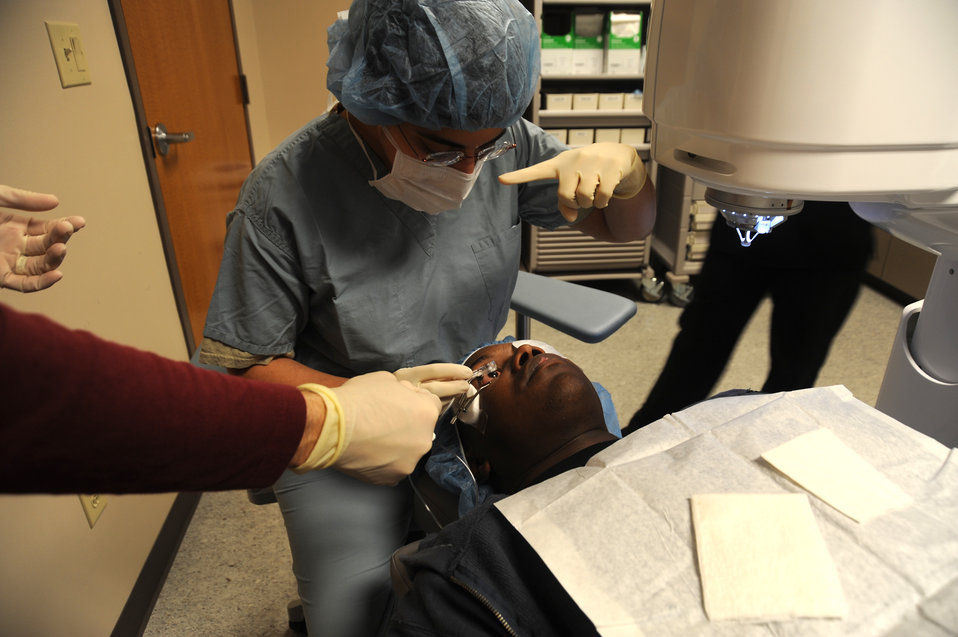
WHMC LASIK

Maj. (Dr.) Vashuda Panday prepares to cut a flap in the cornea of Army Staff Sgt. Stanley Arnold as a step in his LASIK refractive surgery March 3, 2011, at Lackland Air Force Base, Texas. Dr. Panday is the chief of cornea refractive surgery at the Joint Refractive Surgery Center and Sergeant Arnold is an instructor and infantryman at Ft. Huachuca, Ariz.